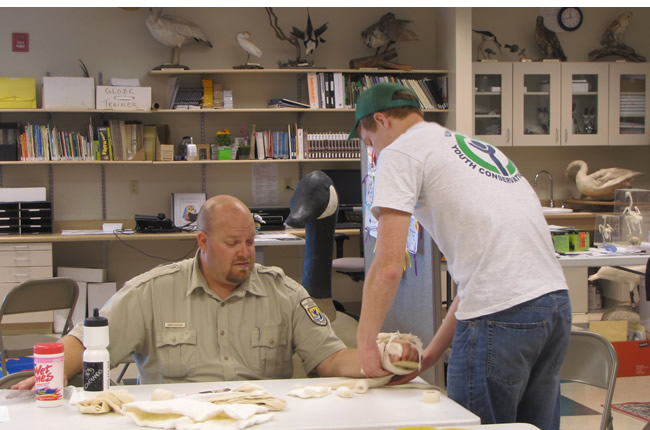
Learning First Aid

First Aid certification training presented by Bear River Migratory Bird Refuge law enforcement officer, Greg Mullin. A Youth Conservation Corp participant learns how to bandage a wounded hand during training.